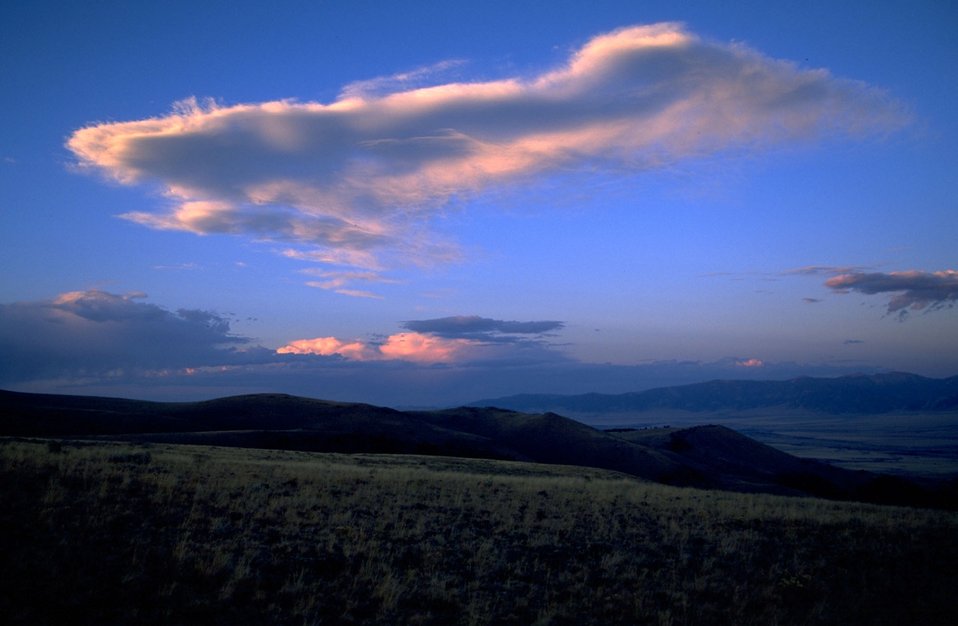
Clouds at sunset above forested ridge